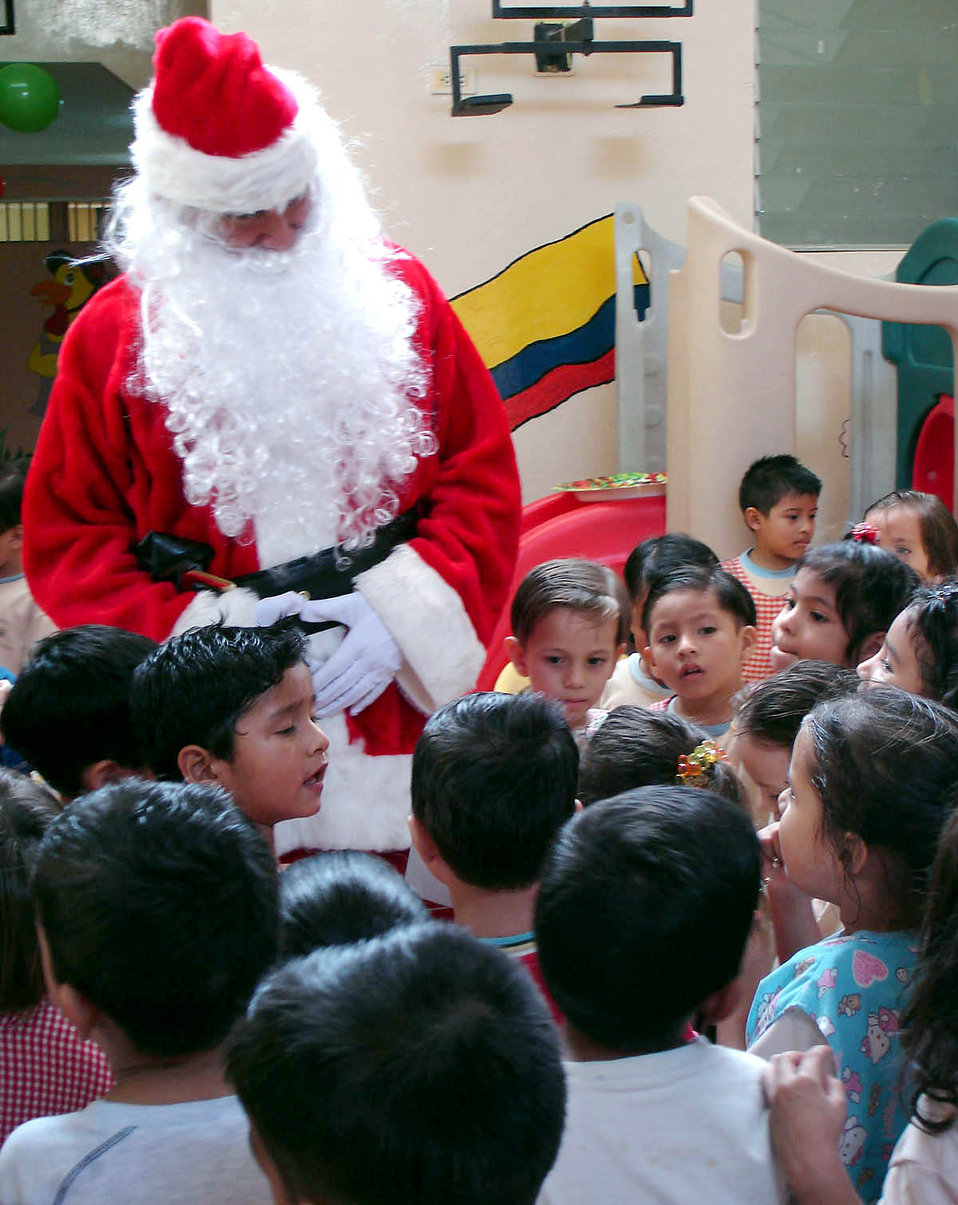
Santa visits Ecuador

MANTA AIR BASE, Ecuador (AFPN) -- Santa Claus listens to children sing after they received toys at an elementary school. Airmen will be giving 1,800 toys to children at schools, hospitals and other organizations for the holidays.